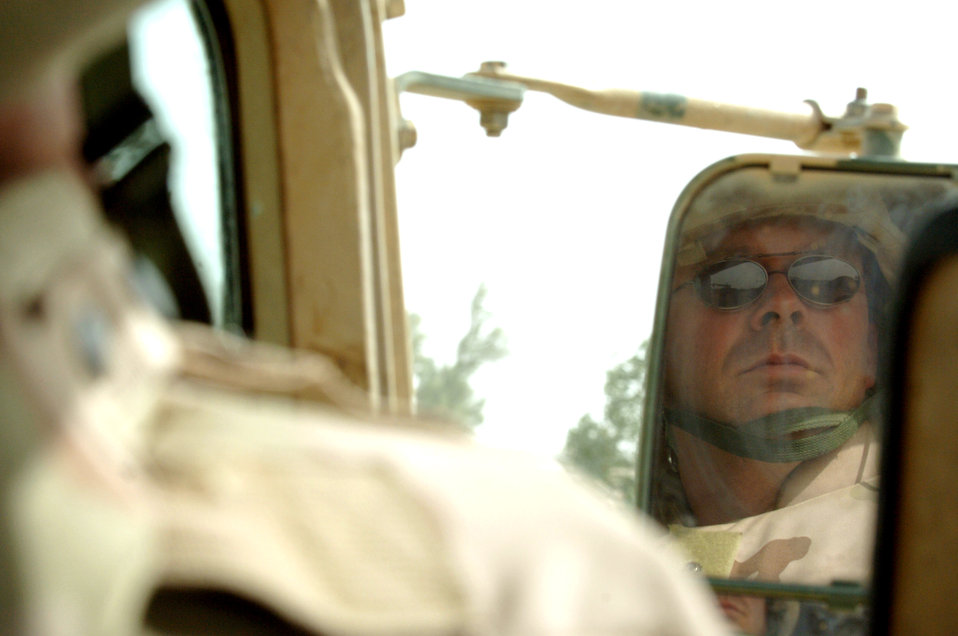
Chaplain serves Airmen, Soldiers at remote posts

IRAQ -- Chaplain (Capt.) Chad Zielinski mulls over his upcoming sermon for Sunday mass during the drive from Ali Base to Camp Cedar. Chaplain Zielinski is the only military Catholic chaplain in southeast Iraq, and he travels to Scania, a three- to four-hour drive from Ali Base, to serve the religious needs of Catholic parishioners there. He is the 407th Air Expeditionary Group Catholic chaplain at Ali Base.